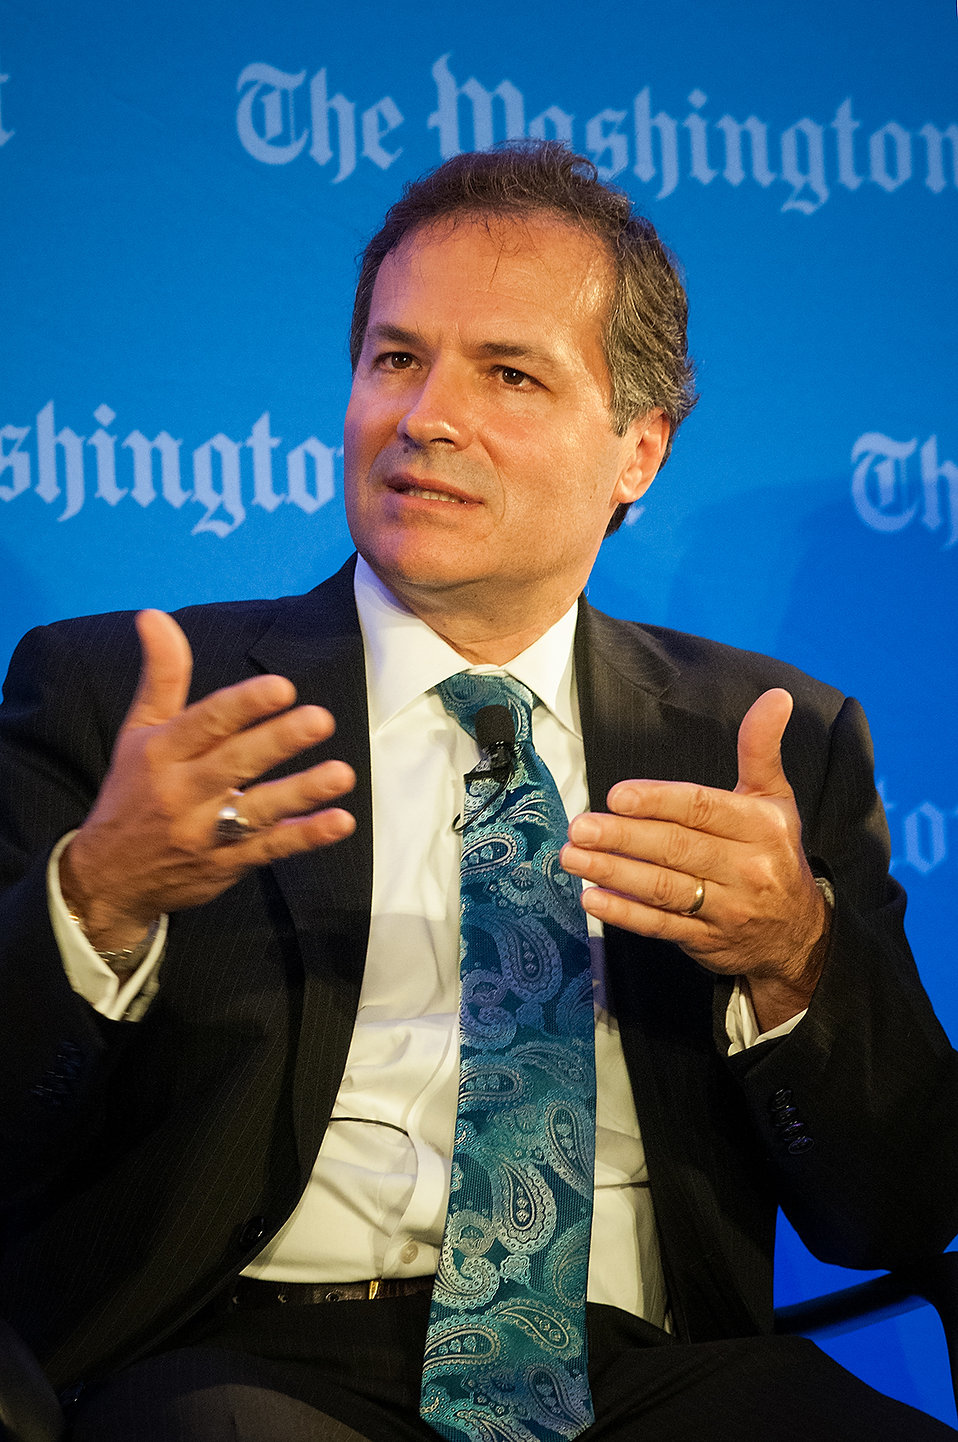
World Food Program U.S. Relations Office Director Jon Brause answers questions presented by Washington Post Live Editor Mary Jordan during the annual live forum, “Future of Food: Building a Sustainable Food System 2013,” sponsored by the Washington Post in Washington, D.C. on Wednesday, May 22, 2013. Agriculture Secretary Tom Vilsack, leading agricultural, government and nutrition experts discussed expanding healthy, sustainable food systems including public-private partnerships, the market’s role in nutrition and the future of agricultural innovation.